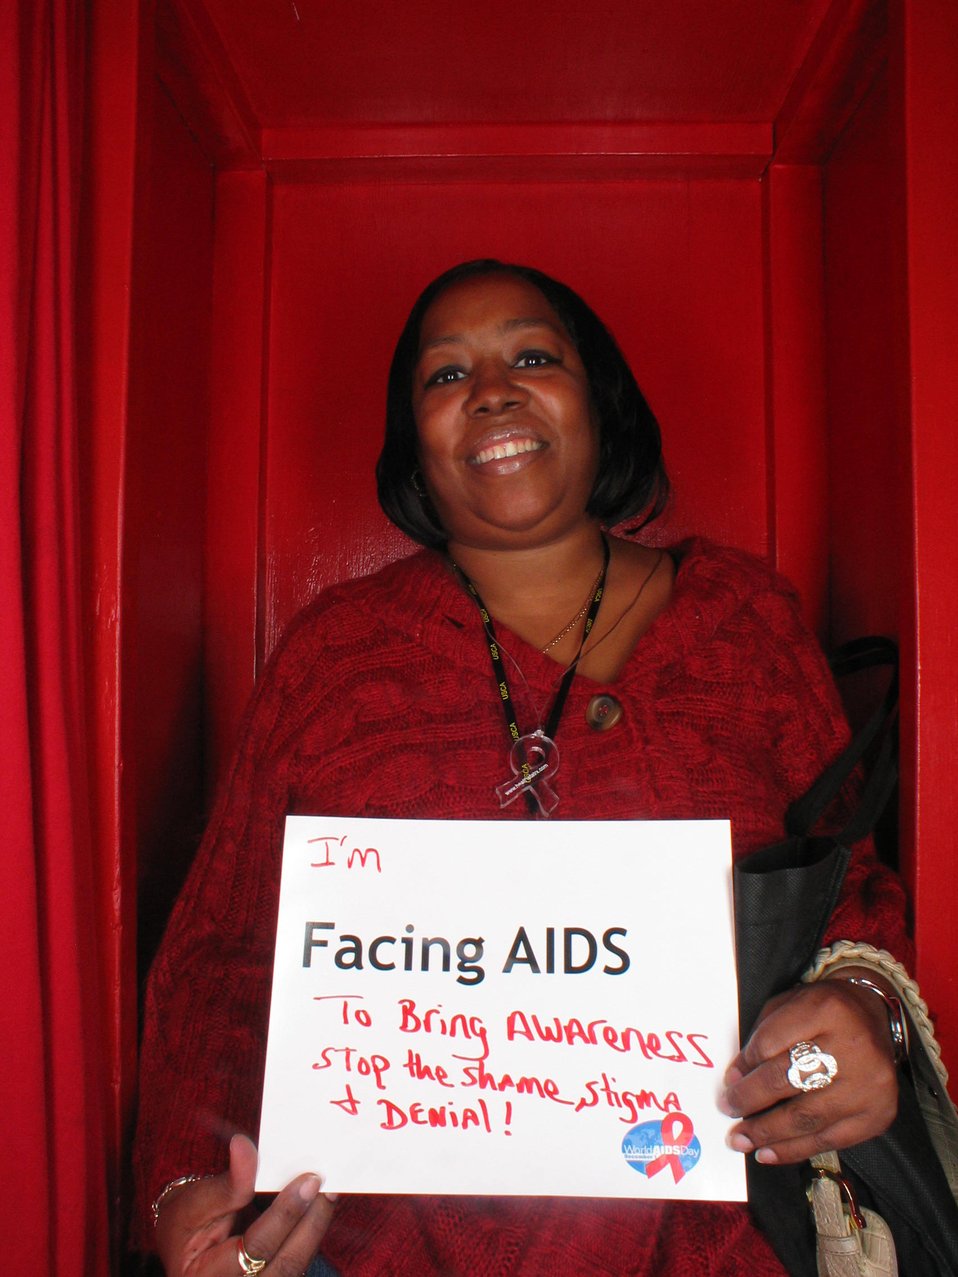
I'm Facing AIDS to stop the shame, stigma and denial.